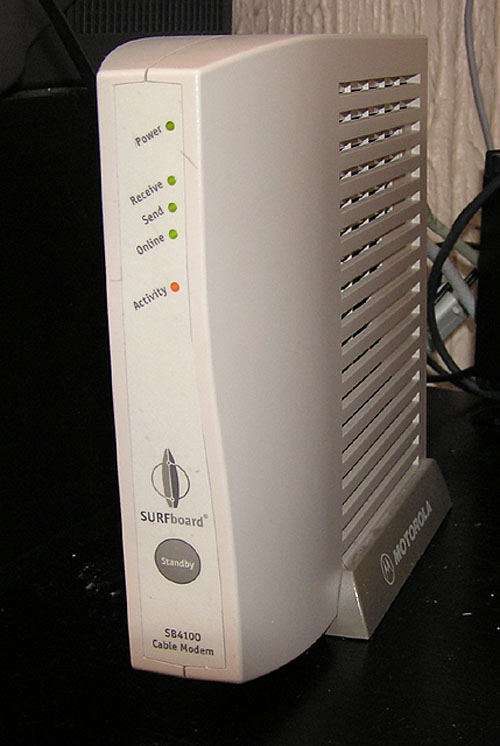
Cable.modem.arp.500pix